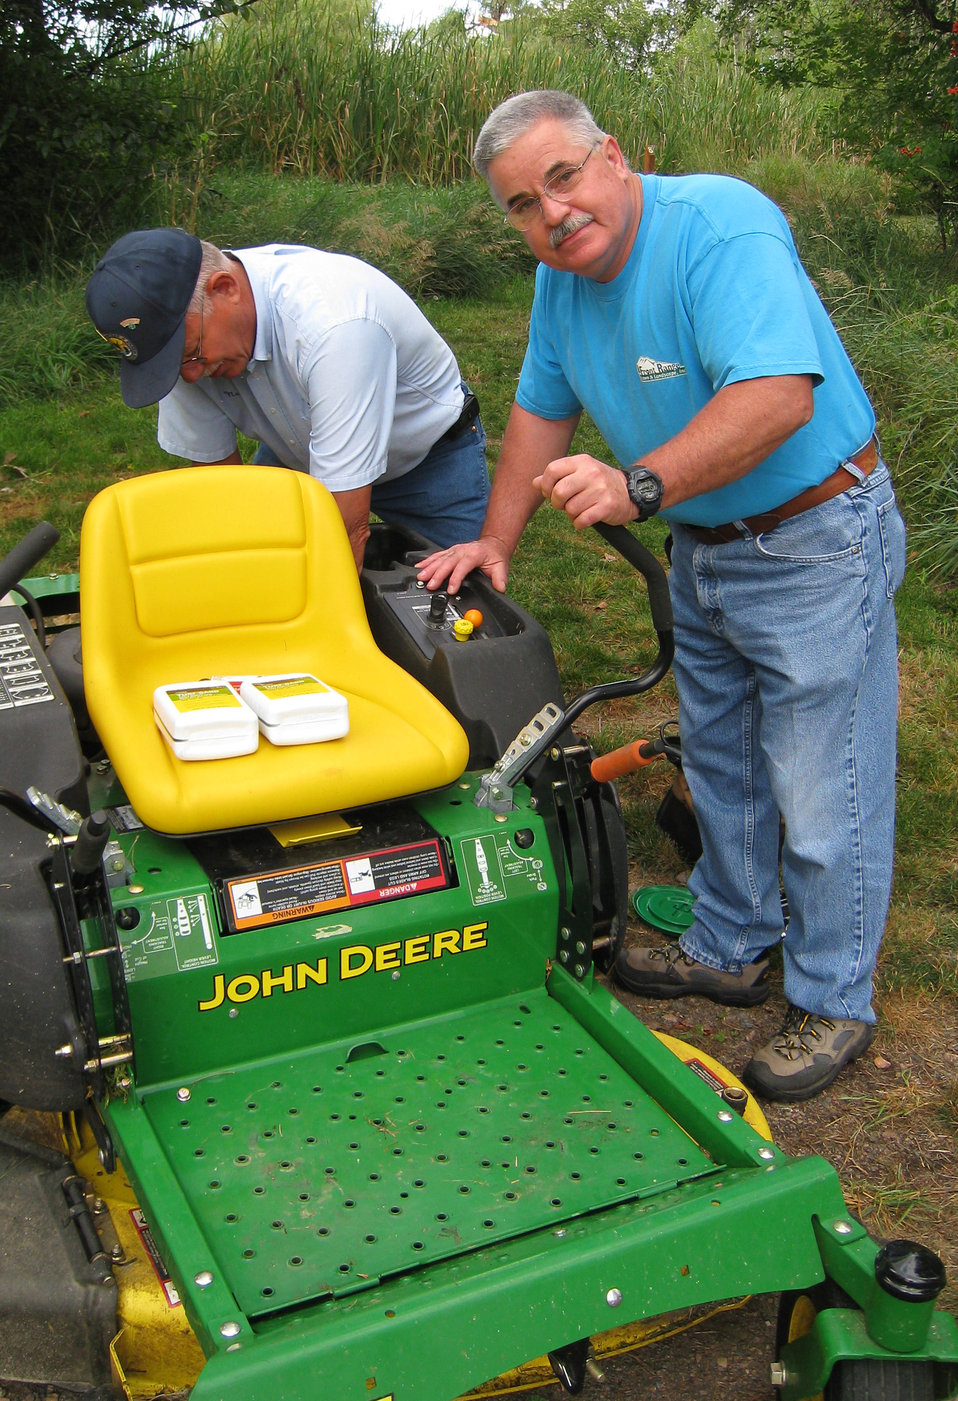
Two Ponds Tuesday Mower Oil